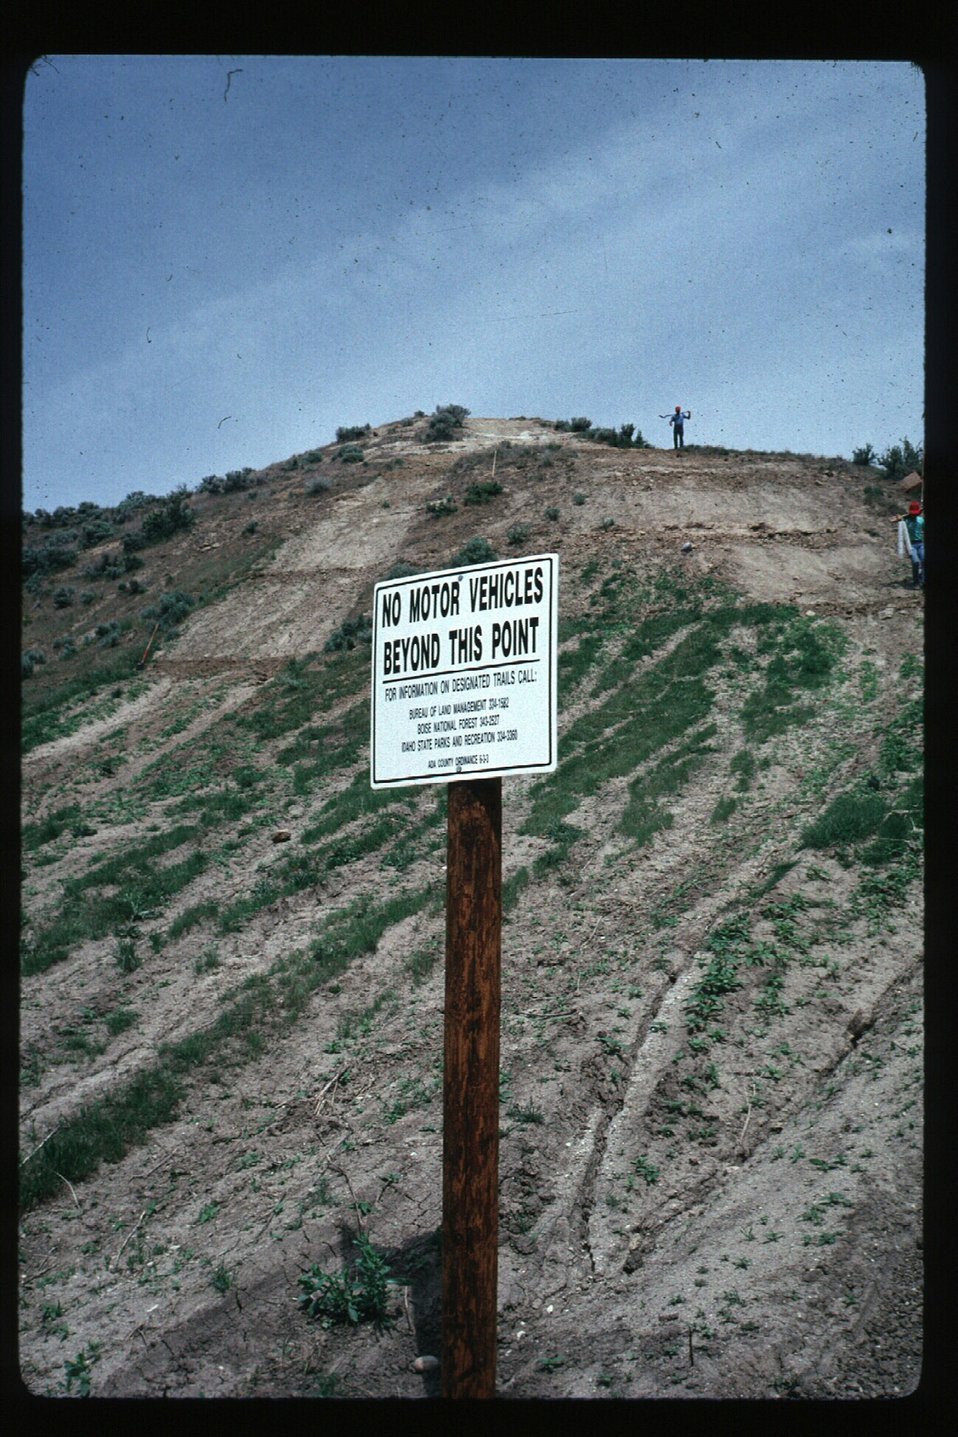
Rangeland Tending the Boise Foothills Clean up Four Rivers Field Office LSRD Lower Snake River District